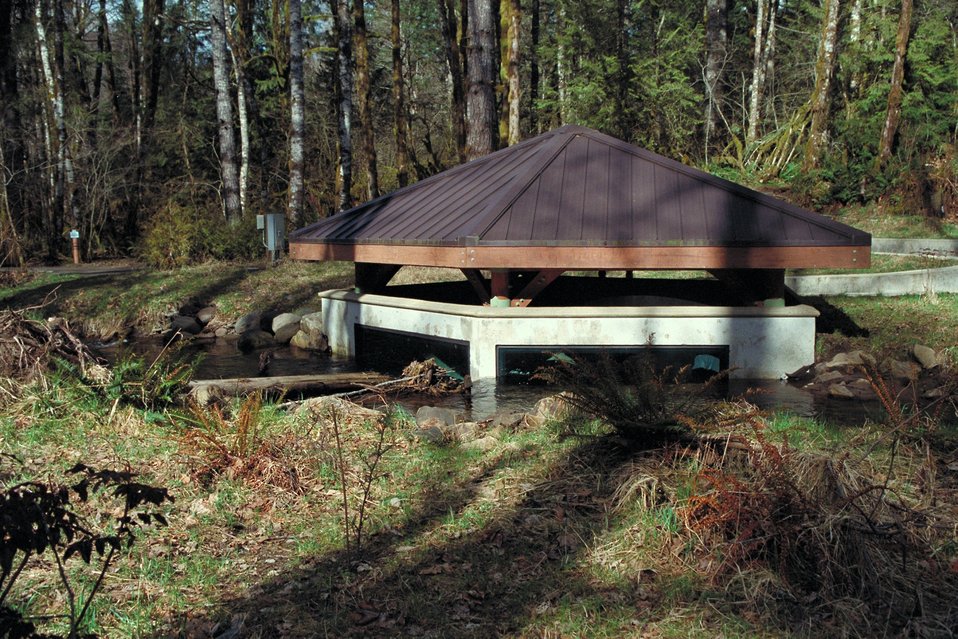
Cascade Stream Watch is an environmental education program conducted at BLM's Wildwood Recreation site.